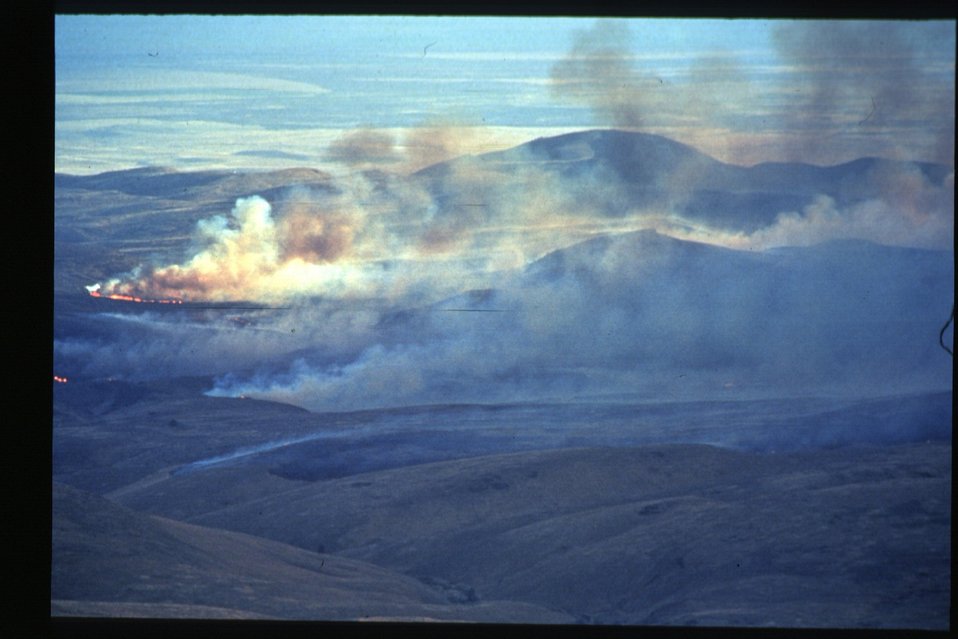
Boise Foothills Fire Danskin Mountains and South Fork of Boise River Smoke Four River Field Office LSRD Lower Snake River District